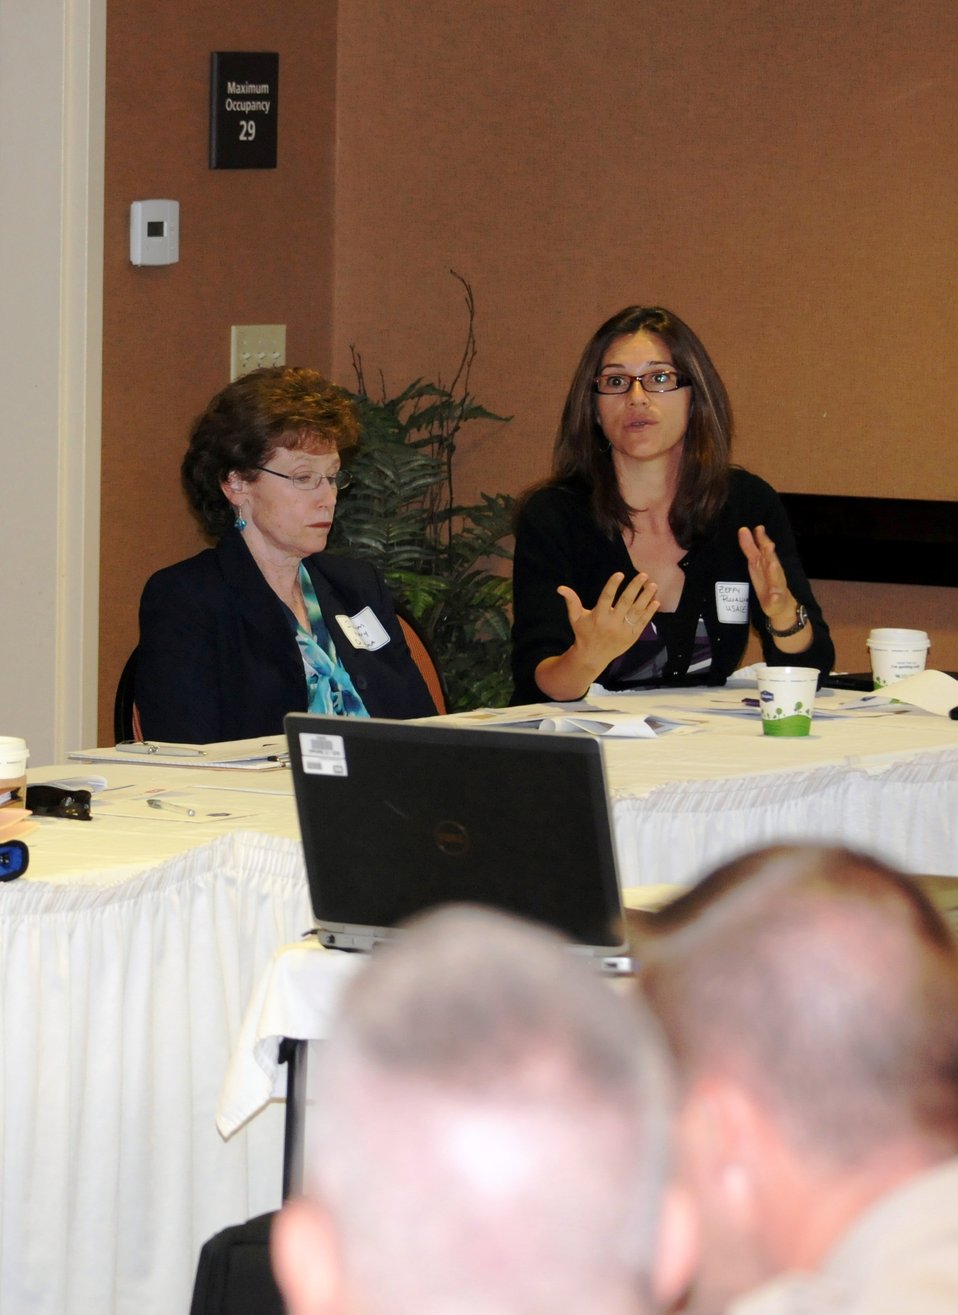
Martis Creek Dam emergency response exercise

Zeffy Ruvalcaba (right), a civil engineer with the U.S. Army Corps of Engineers Sacramento District, speaks to participants at the Martis Creek Dam emergency response exercise in Truckee, Calif., Aug. 29, 2012. The exercise provided federal, state and local agencies an opportunity to work alongside each other and evaluate current emergency response plans and capabilities.

Martis Creek Dam, located about 32 miles southwest of Reno, Nev., was completed in 1972 and provides flood risk management and recreational benefits.